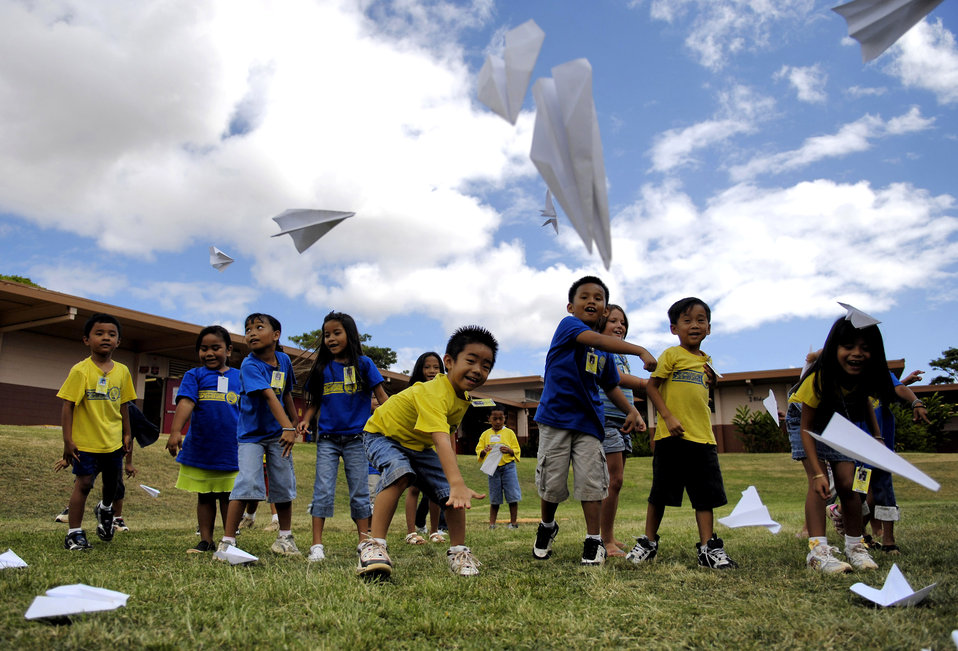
Learning to fly at Air Force Week Honolulu

Children from August Ahrens Elementary School in Waipahu, Hawaii, throw paper airplanes Sept. 10 during Air Force Week Honolulu. Approximately 800 Airmen from Hickam Air Force Base, Hawaii, spent their day at 80 local schools on the island of Oahu reading, playing and educating children about the Air Force.